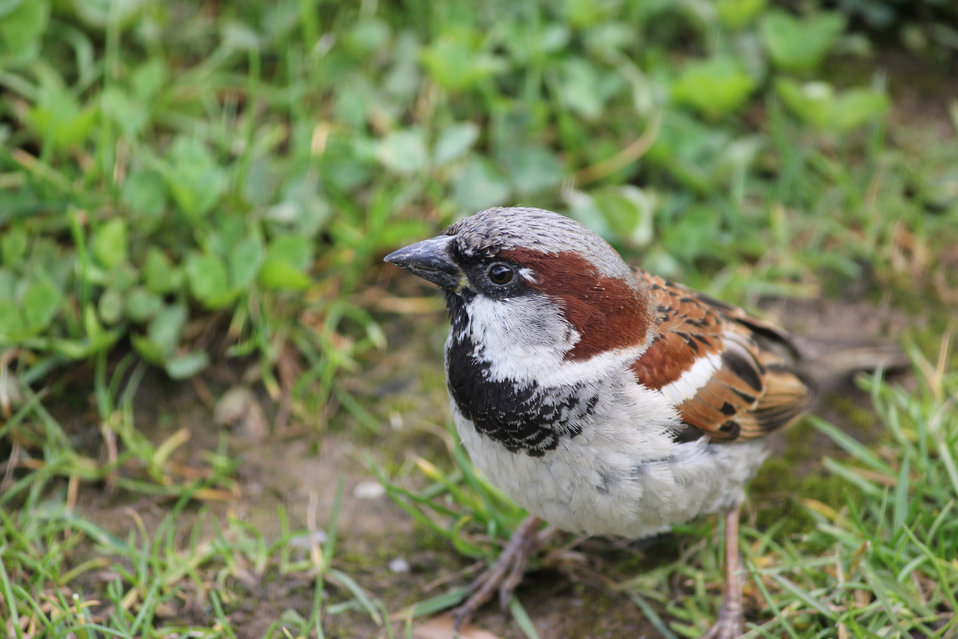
House sparrow feeding on the ground.